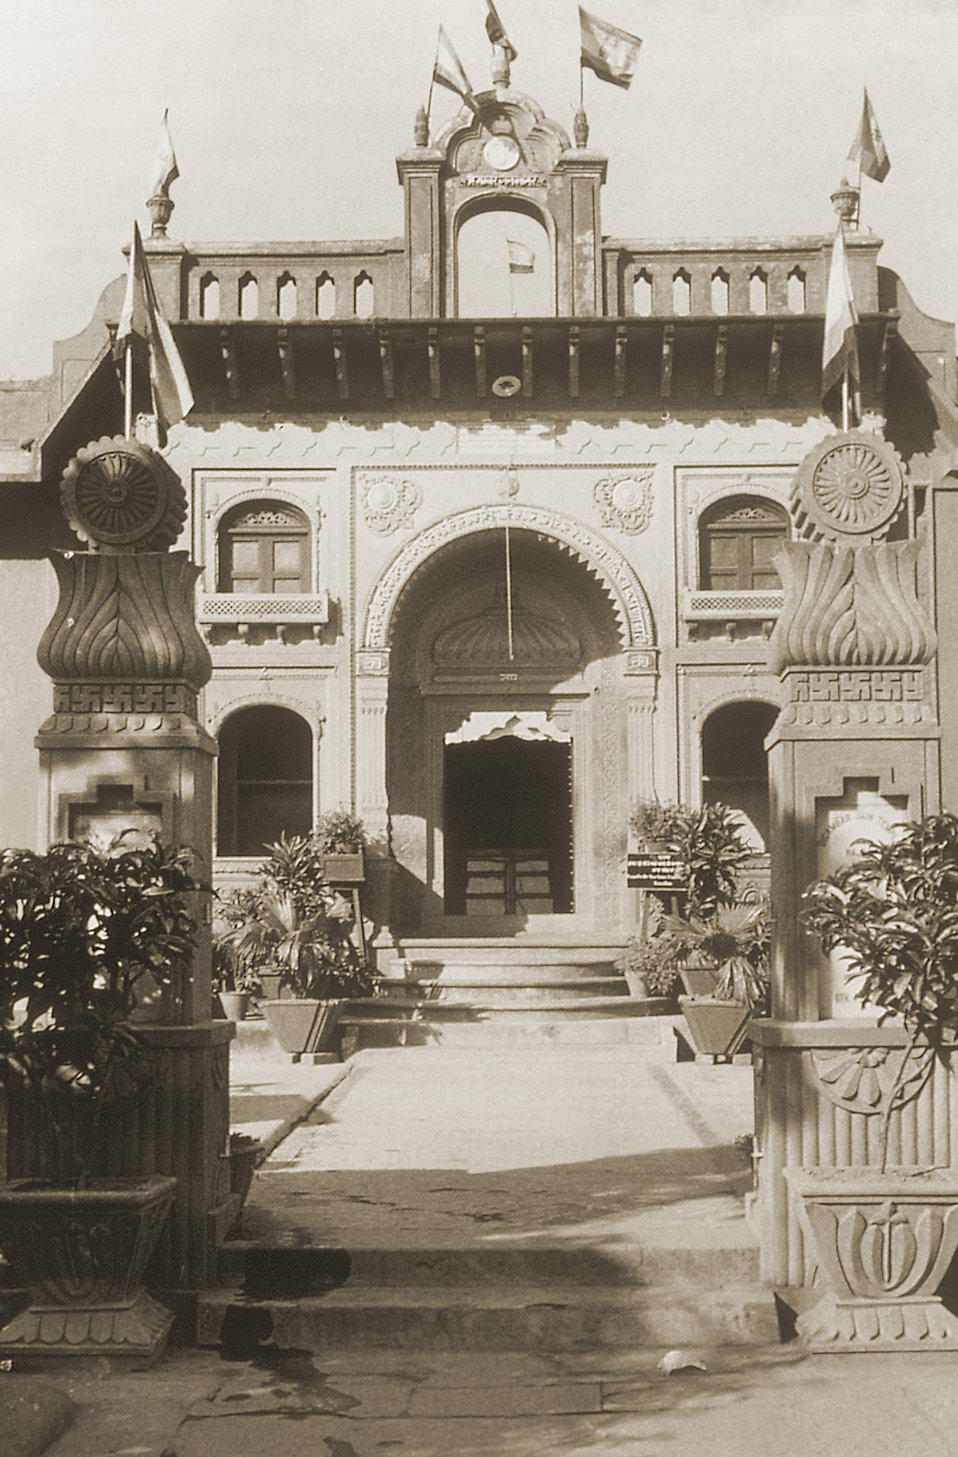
This image depicts a Jain Temple in the town of Rajgir (or Rajgriha) located in the Patna district, in the Indian state of Bihar.